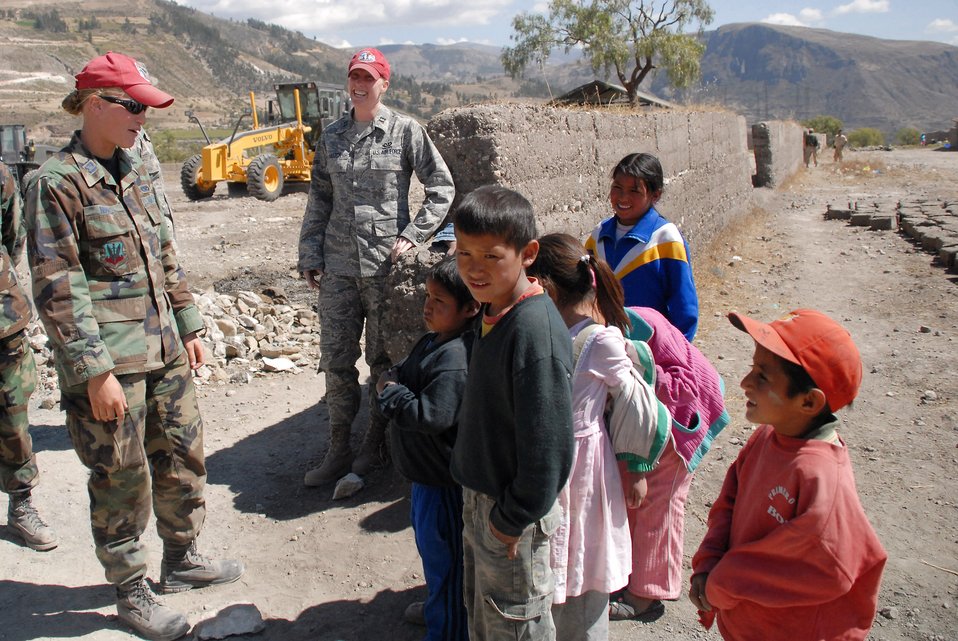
New Horizon Peru

Captains Stacy Nimmo and Megan Leitch talk with the children of Yanama, Peru, during a visit to the construction site for a school being built in support of New Horizons Peru 2008, a humanitarian event that benefits thousands of Peruvians. Nearly 300 members from the U.S. Air Force, Army, Marines, and Navy came together to provide Peruvians with new schools, clinics, and water wells. The captains are deployed from the 820th RED HORSE Squadron at Nellis Air Force Base, Nev.